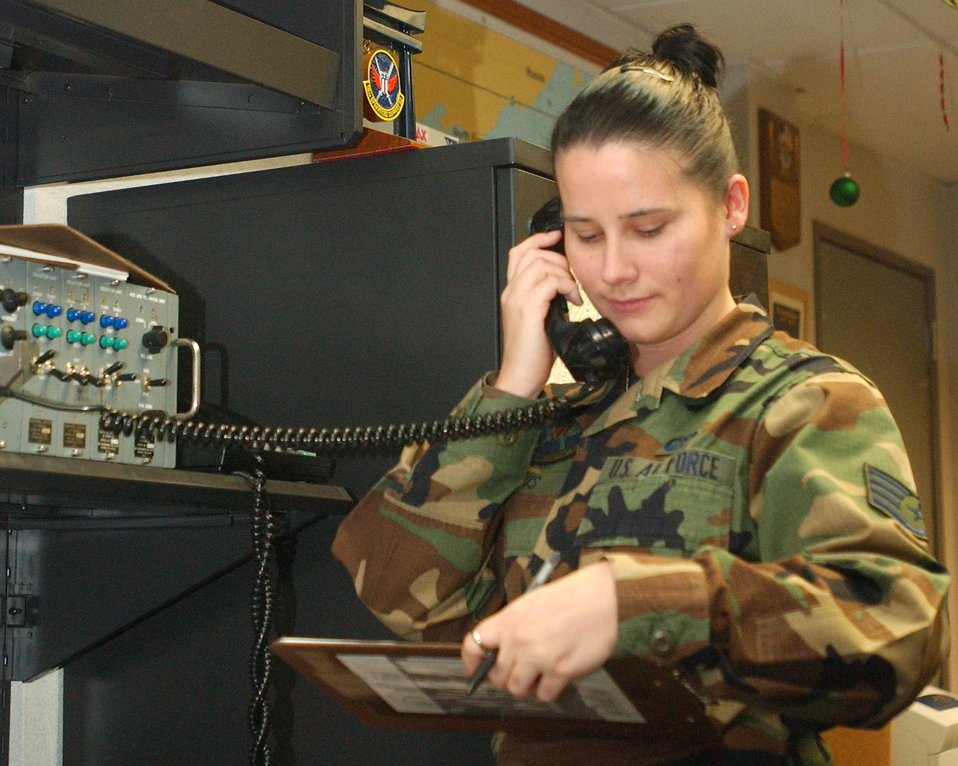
Serving through the season: Staff Sgt. Kyna Davis

Staff Sgt. Kyna Davis, 18th Operations Support Squadron, sends weather information via radio to flying aircraft at Kadena Air Base, Japan. Sergeant Davis is one of many Airmen on duty this holiday season.